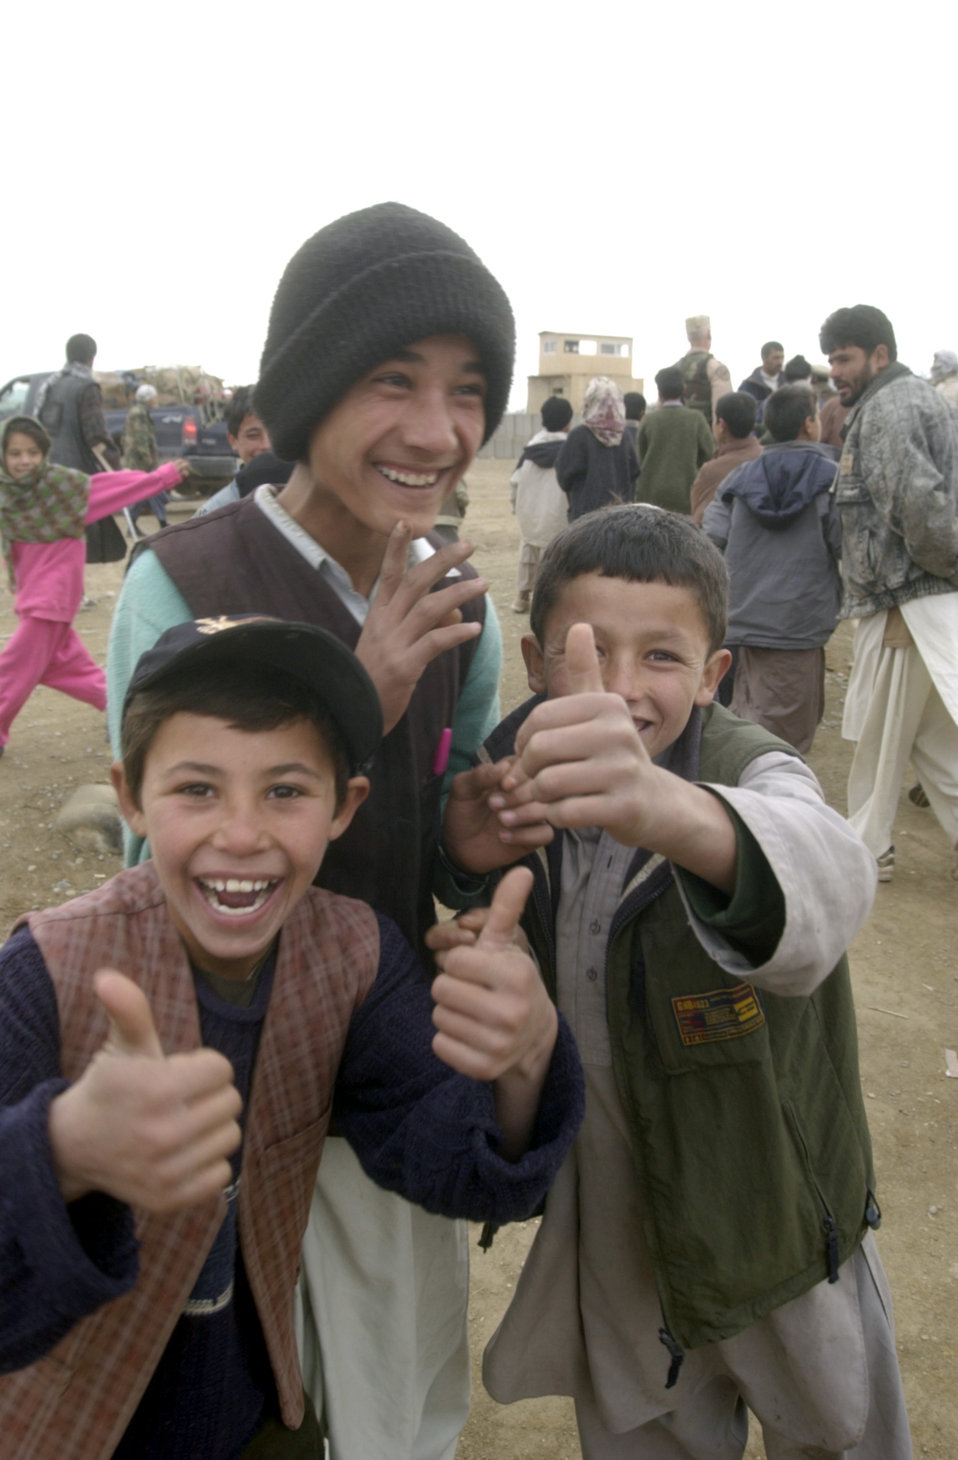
Adopt a Village

JANGADAM VILLAGE, Afghanistan -- Children here greet 455th Expeditionary Operations Group airmen during the delivery of humanitarian supplies Dec. 31.